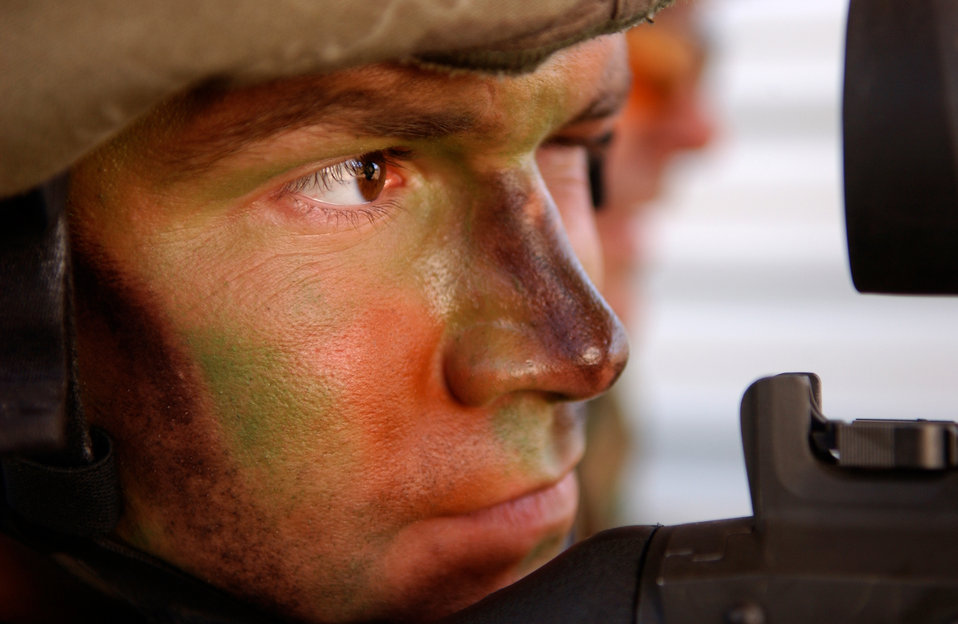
Defender Challenge 2004

FORT HUACHUCA, Ariz. -- Senior Airman Dustin McPhillips fires the M-240B machine gun during an exercise here recently. Members of the U.S. Air Forces in Europe Defender Challenge team are spending three weeks here in preparation for the 2004 Defender Challenge competition. Defender Challenge held at Lackland Air Force Base, Texas, is a security forces competition pitting competitors from major commands against one another. Airman McPhillips is assigned to the 568th Security Forces Squadron at Ramstein Air Base, Germany.